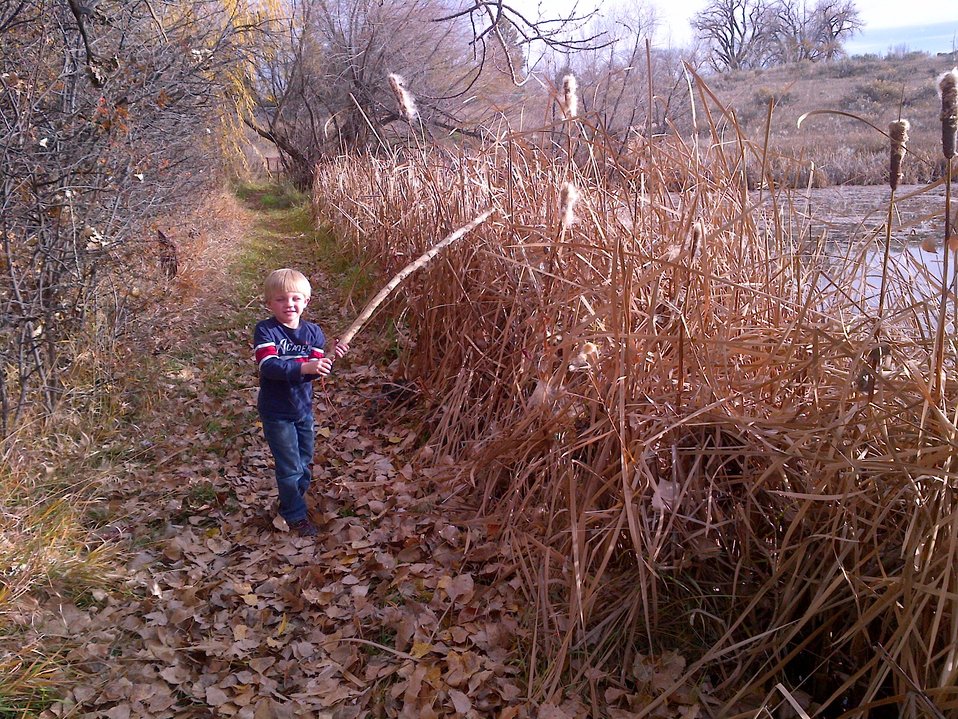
Drop-in Nature Kids